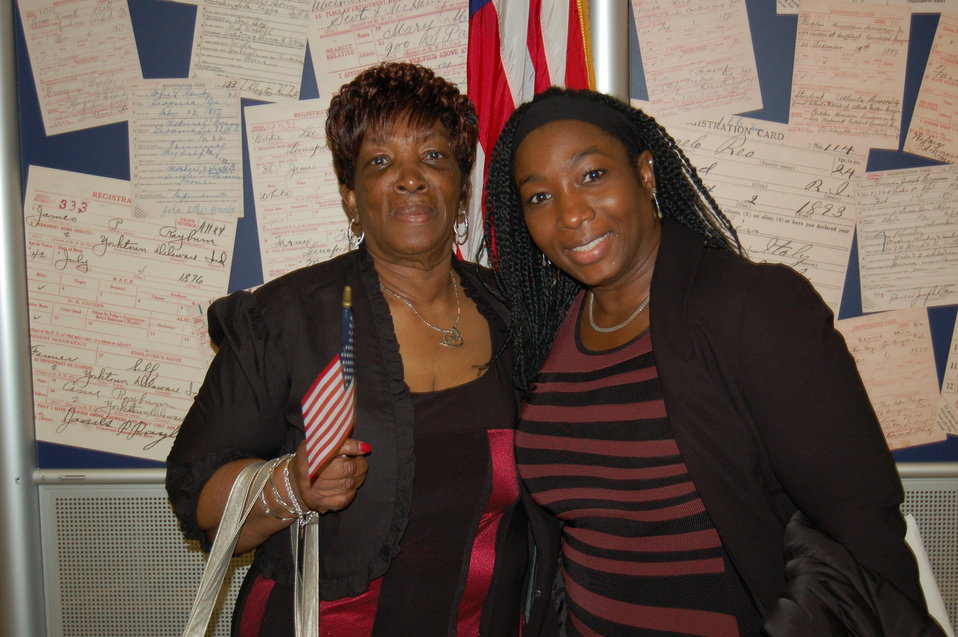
New Citizens